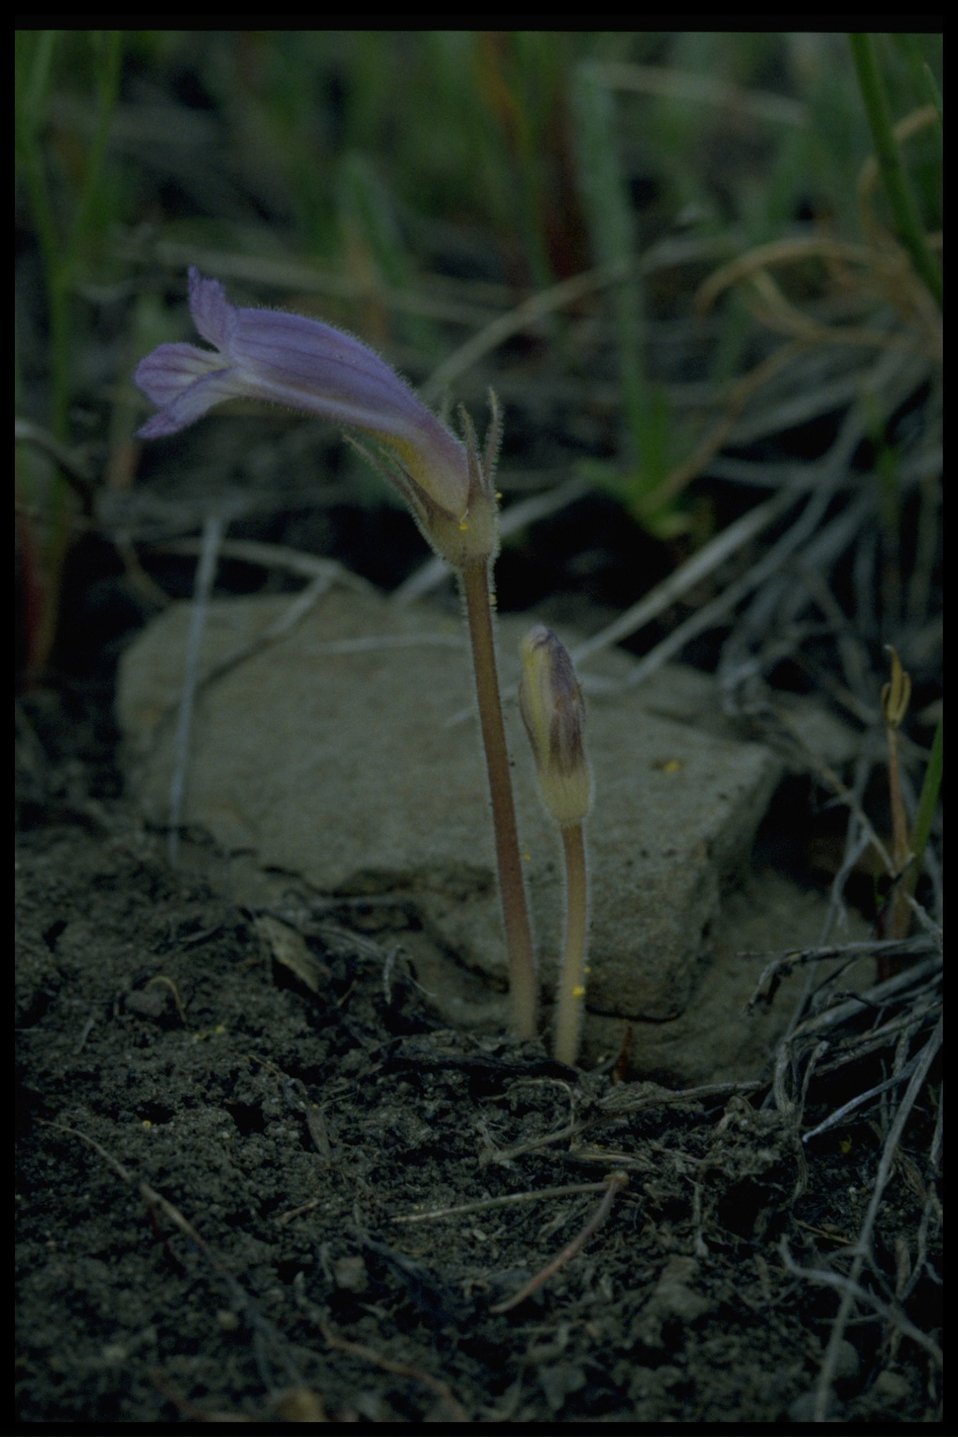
Farshot of oneflowered broomrape (Orobanche uniflora).